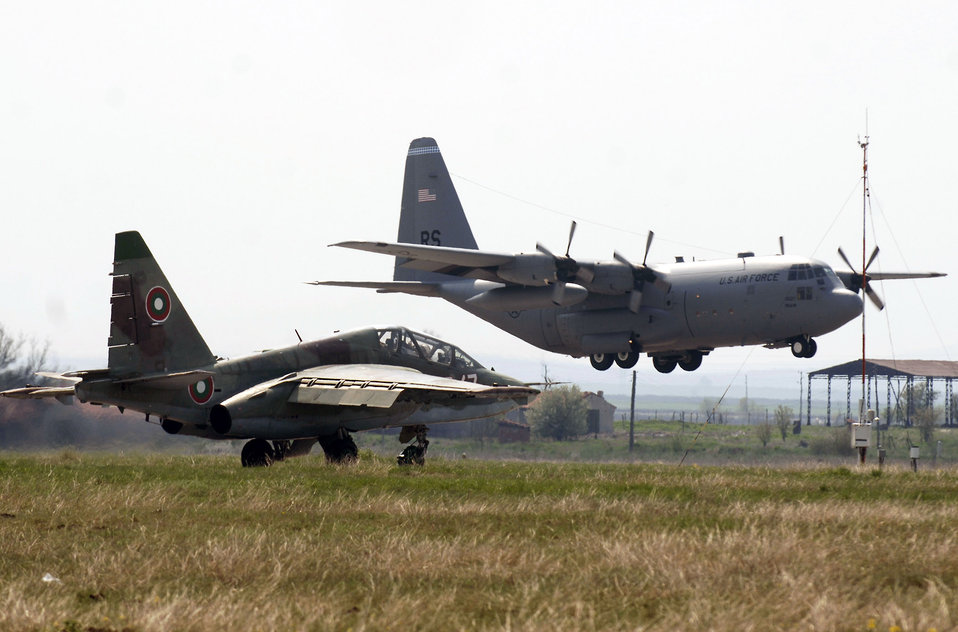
You go first, I can wait

A Bulgarian air force SU-26 yields to a C-130 Hercules landing at Bezmer Aviation Base, Bulgaria, following a tactical sortie conducted during Exercise Thracian Spring 2008. Aircraft and people from Ramstein Air Base, Germany, are participating in the annual bilateral training exercise.